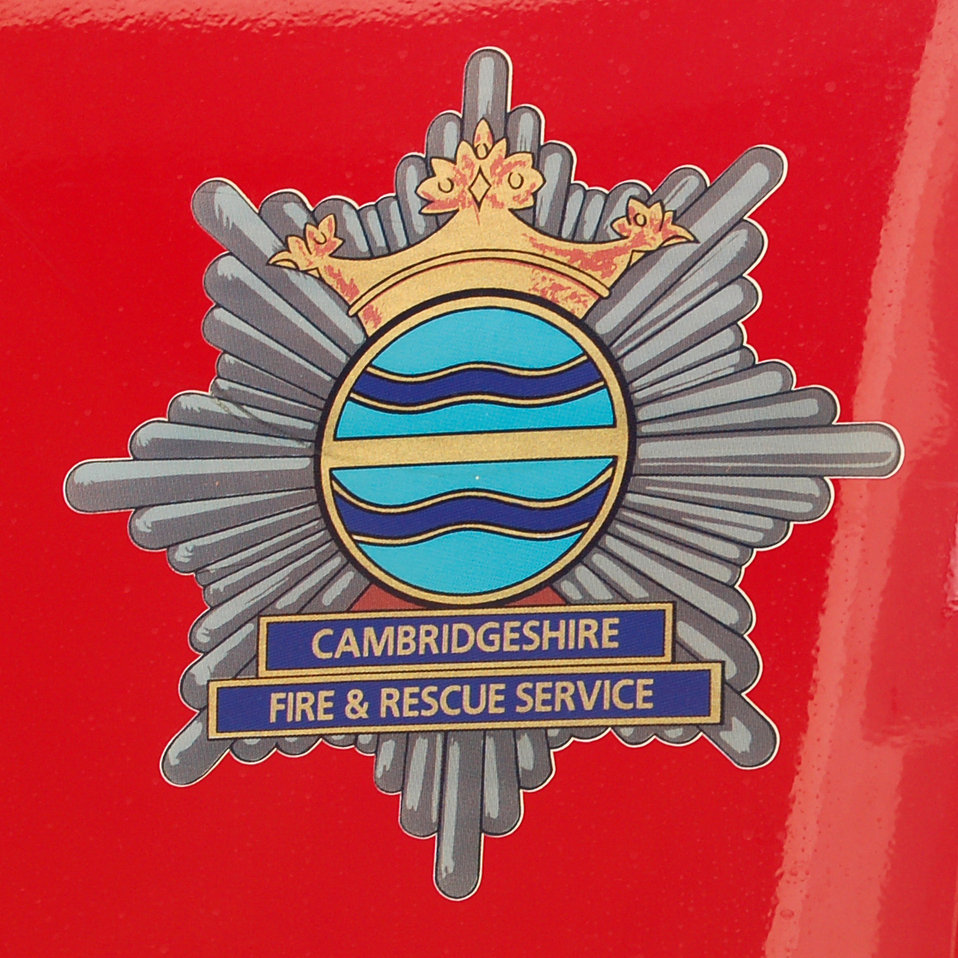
Cambridge-FRS-logo